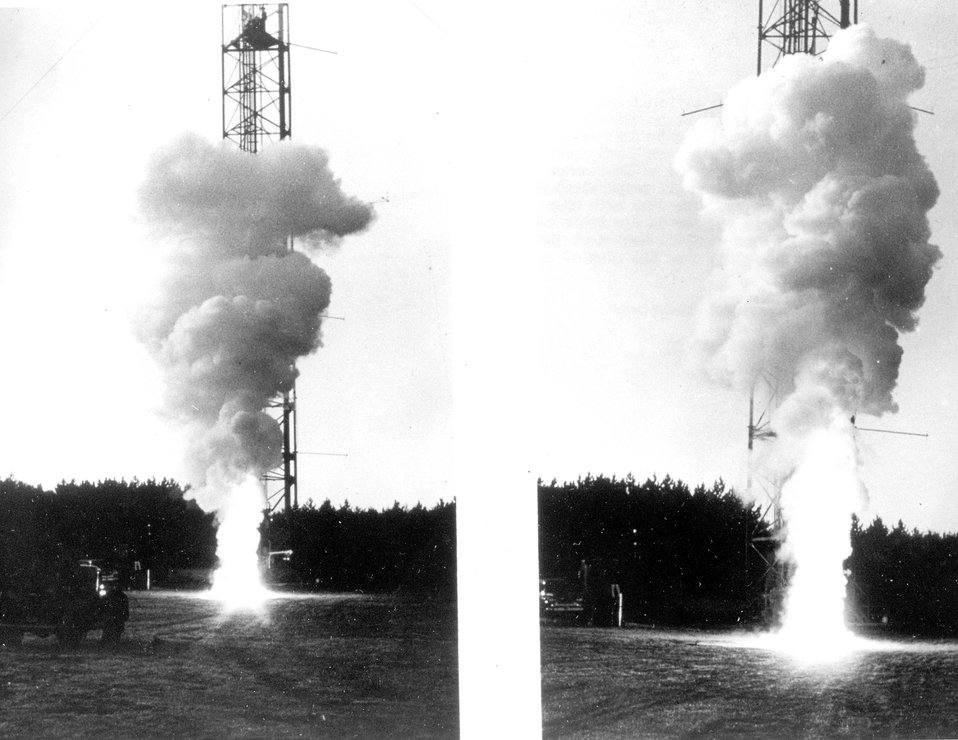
Small scale experiments conducted with burning rocket fuels provide data used in
prediction of the diffusion and final height-of-rise of clouds from larger accidental releases.
Wind and air temperature data are taken on nearby towers.